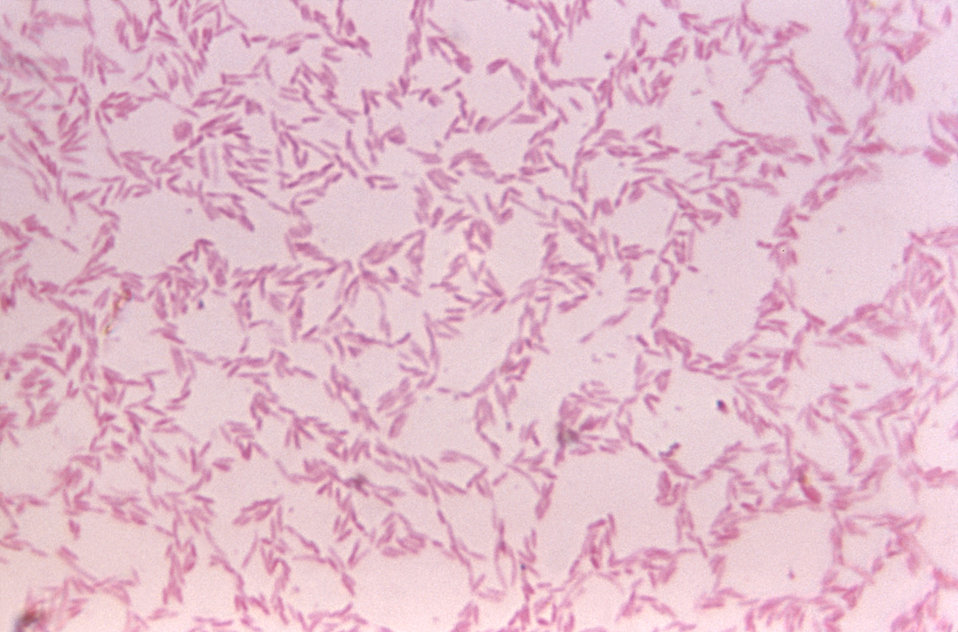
This photomicrograph revealed numerous numbers of Gram-negative, Bacteroides biacutus bacilli, or rod-shaped bacteria. These organisms were harvested from a blood-agar plate (BAP), after having been cultivated over a 48hr period.